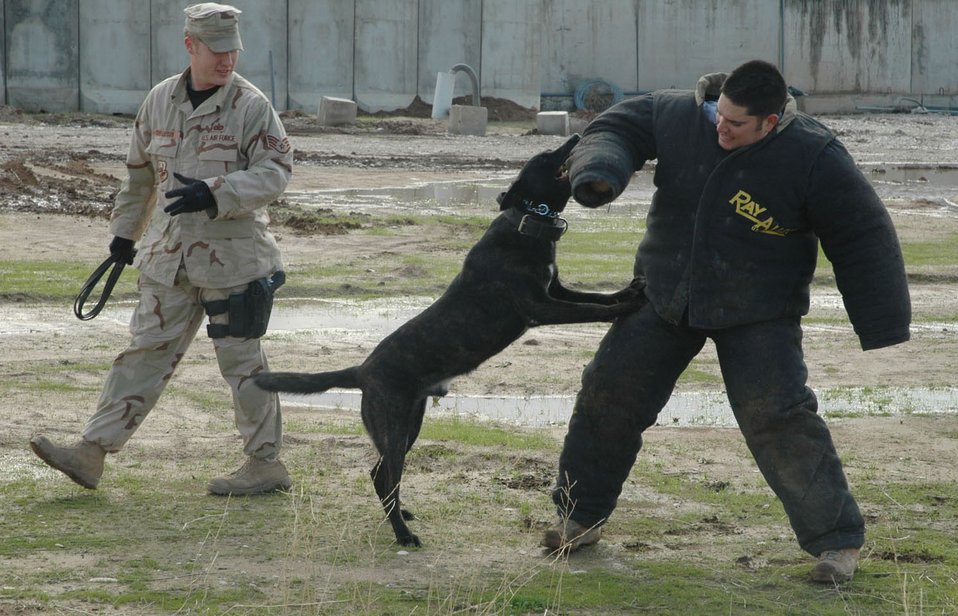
The nose knows

Staff Sgt. Dewan Rakesh feels the bite of military working dog Breston. Staff Sgt. Clinton Cornelison lets Breston enjoy the bite before calling him off. Sergeants Rakesh and Cornelison and Breston are assigned to the 506th Expeditionary Security Forces Squadron at Kirkuk Air Base, Iraq.